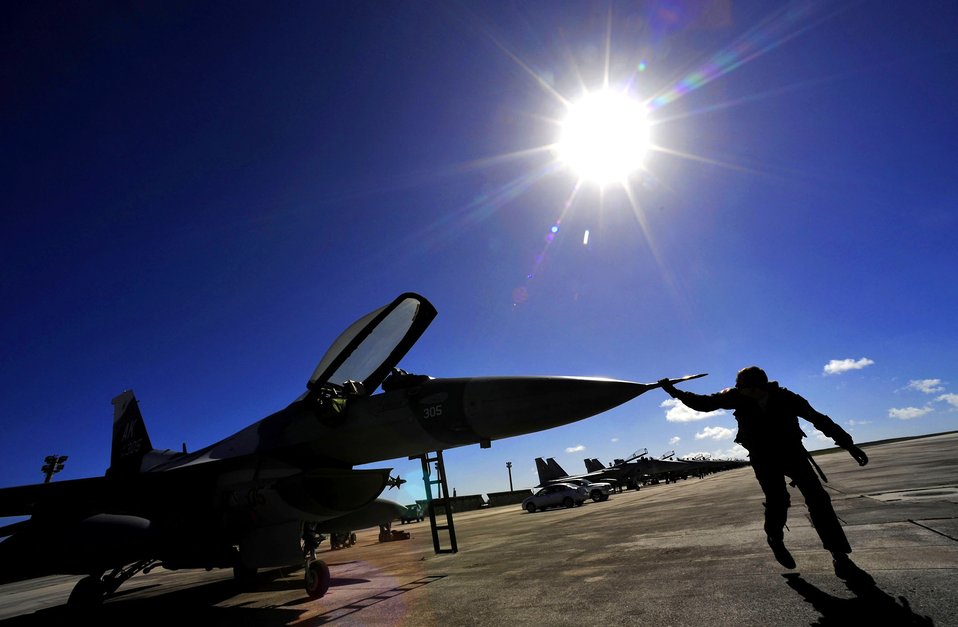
Ready to fly

Maj. Pete Kasarskis conducts a pre-flight check on an F-16 Fighting Falcon Feb. 21, 2011, as part of exercise Cope North at Andersen Air Force Base, Guam. Major Kasarskis is a pilot assigned to the 18th Aggressor Squadron.